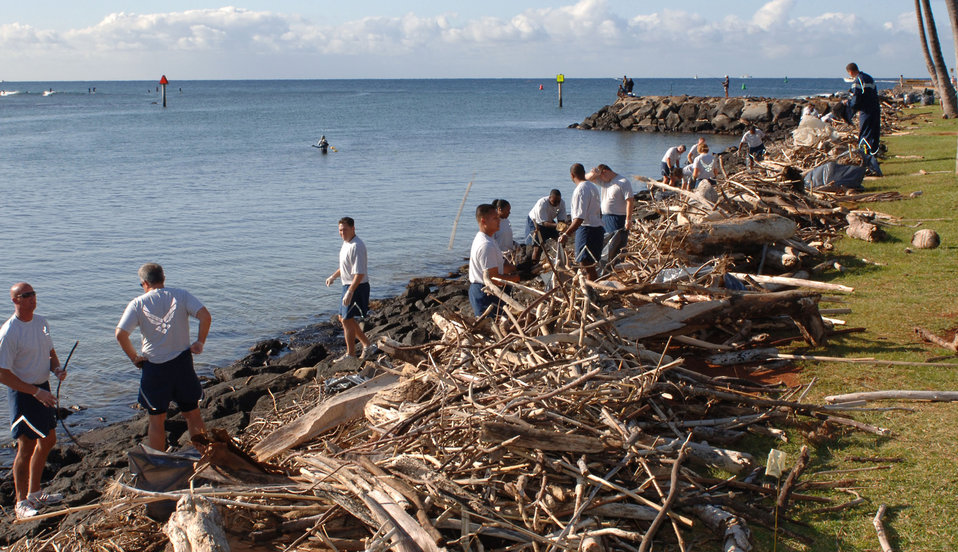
Hickam Airmen serve Oahu community during Jungle Day

Airmen from 13th Air Force at Hickam Air Force Base, Hawaii, clean trash and debris from the rocky shoreline March 13 along Ala Moana Beach Park in Honolulu. The Airmen volunteered for the beach cleanup as part of 13th Air Force's Jungle Day, a tradition for the unit that occurs every Friday the 13th.